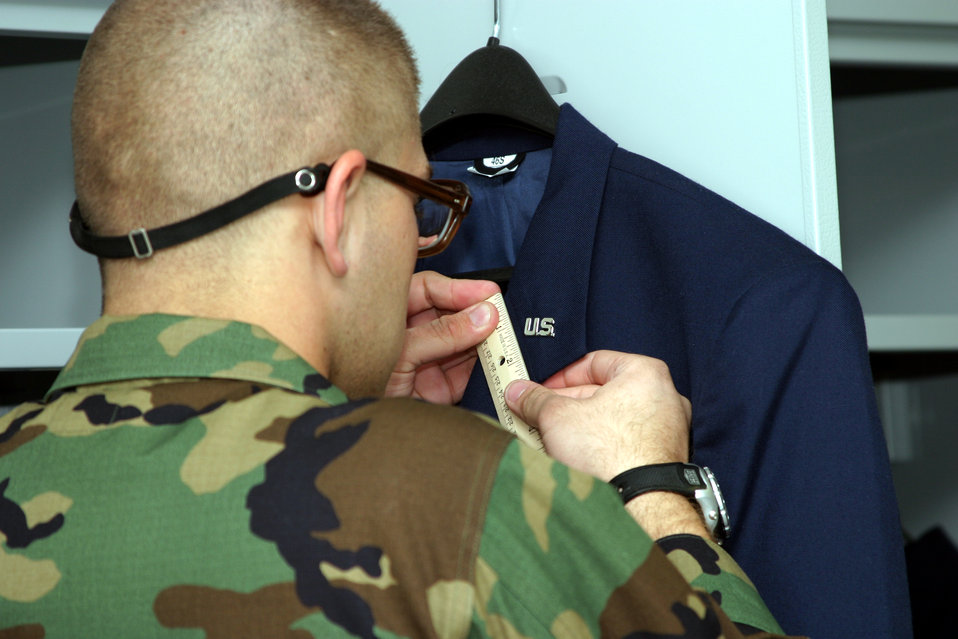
Mission-ready Airmen

LACKLAND AIR FORCE BASE, Texas -- Airmen are taught from the beginning of basic training that, from uniforms to marching, attention to details are and will continue to be important in the Air Force.